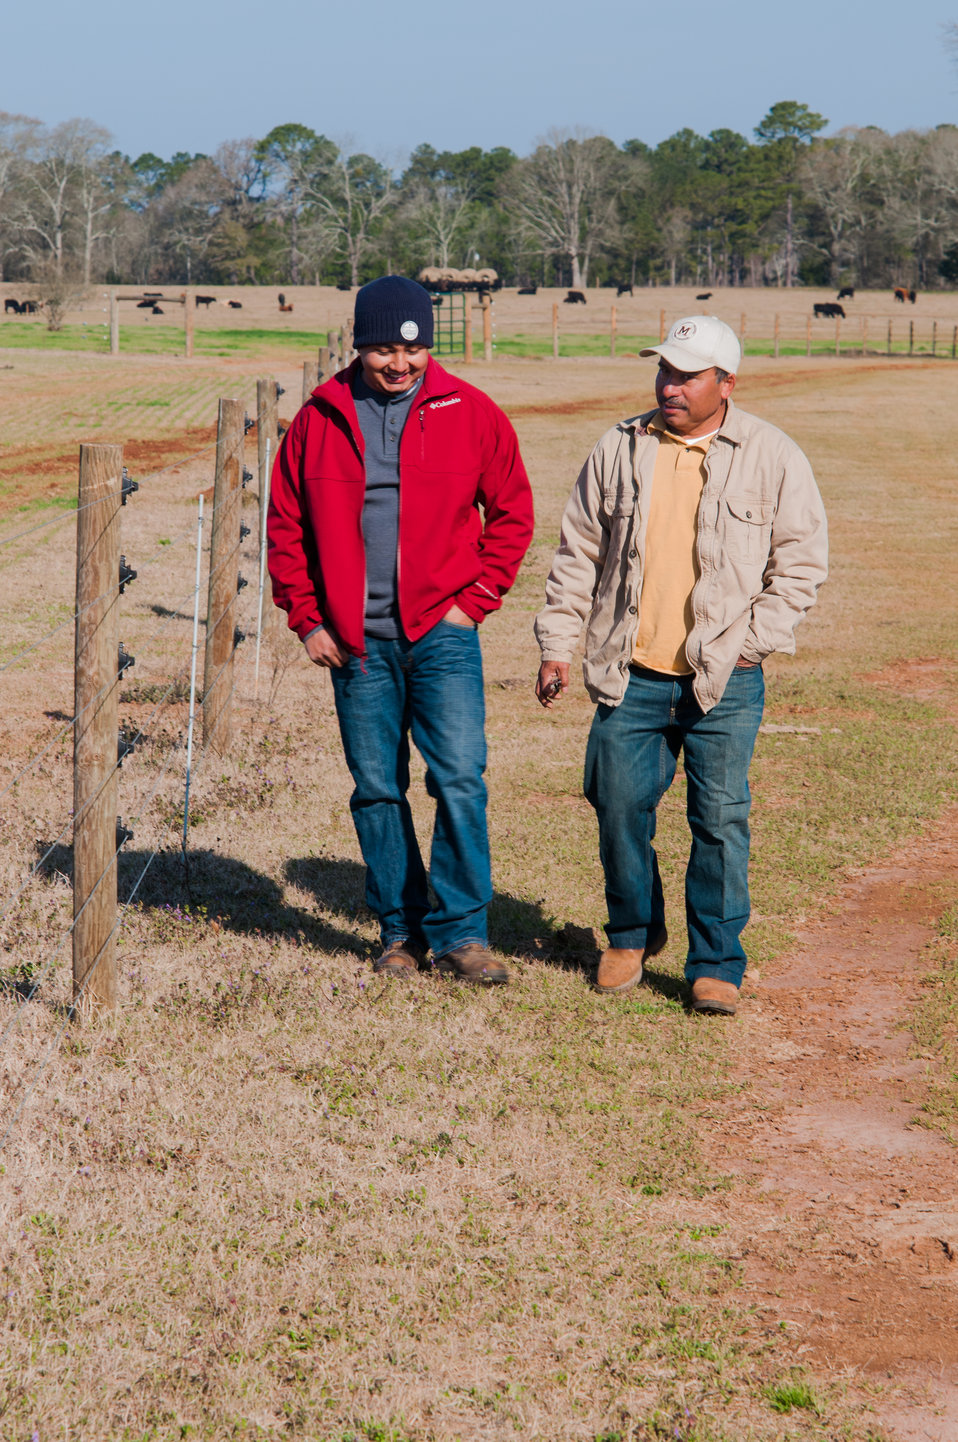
Banamacc Farms owners Yancarlos Nava and Raul Moreno discuss the cross fencing they installed on their farm in Edison, Calhoun County, GA on Mar. 7, 2013. Nava and Moreno were able to install the cross fencing with a U.S. Department of Agriculture (USDA) National Resources Conservation Service (NRCS) Environmental Quality Incentive Program (EQIP) contract. Moreno was able to improve pasture and grazing management and rotate his cattle through different pastures on a grazing schedule to assist with soil and water conservation. The USDA Strike Force Initiative has designated Calhoun County, GA as a Strike Force county selected to receive assistance to relieve persistent poverty in historically high-poverty counties.